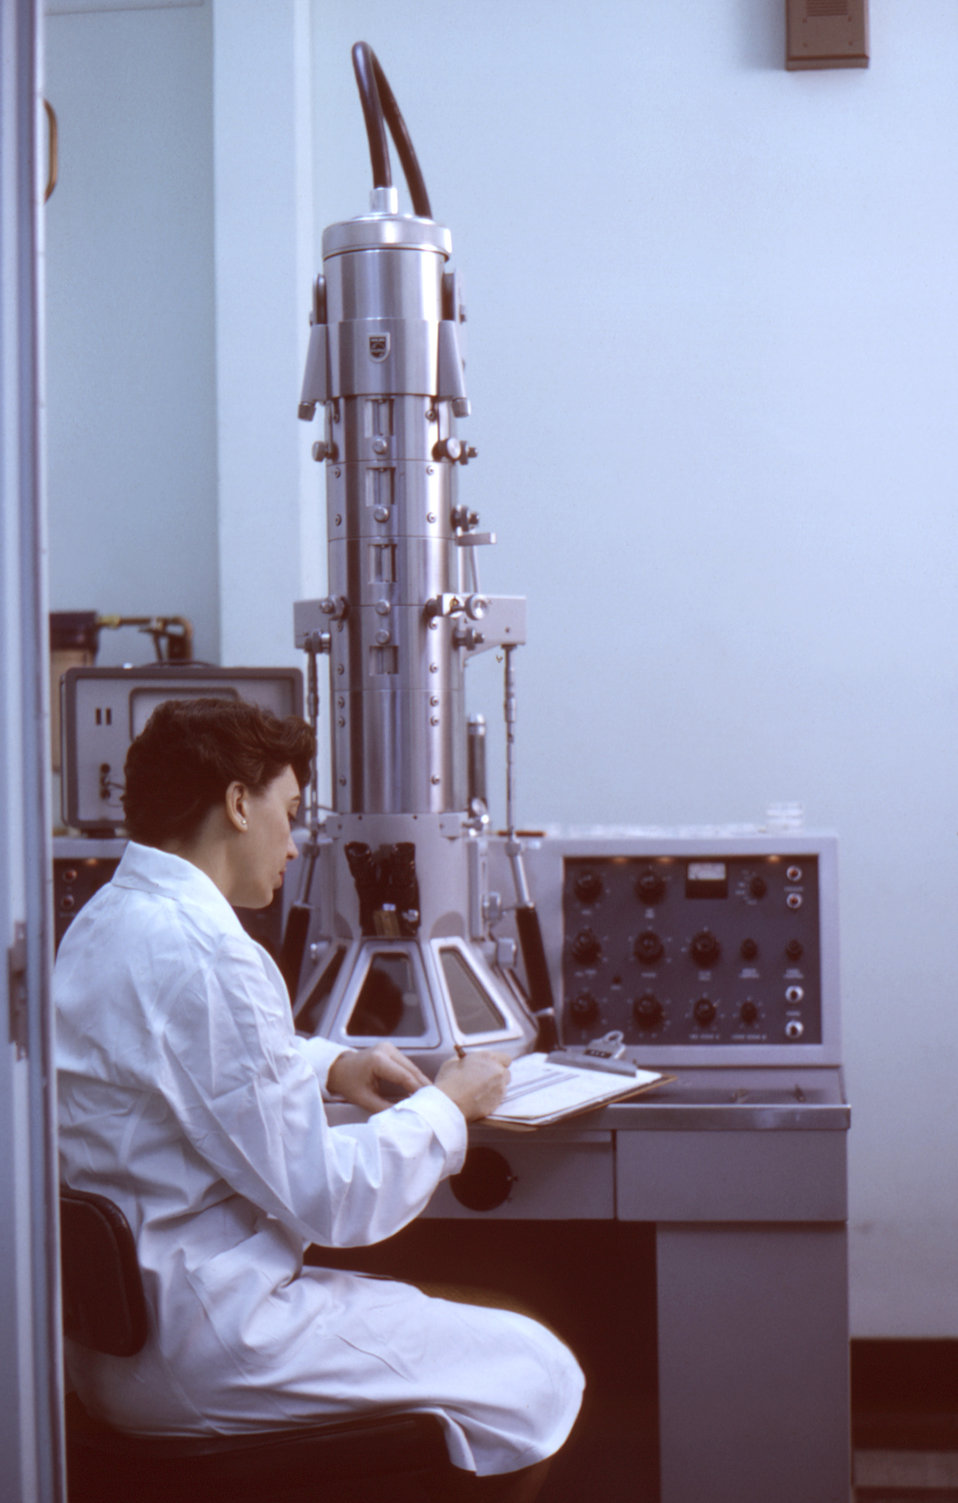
This historic 1965 image depicted a Centers for Disease Control's laboratorian Carey Callaway, seated at a new transmission electron microscope (TEM).